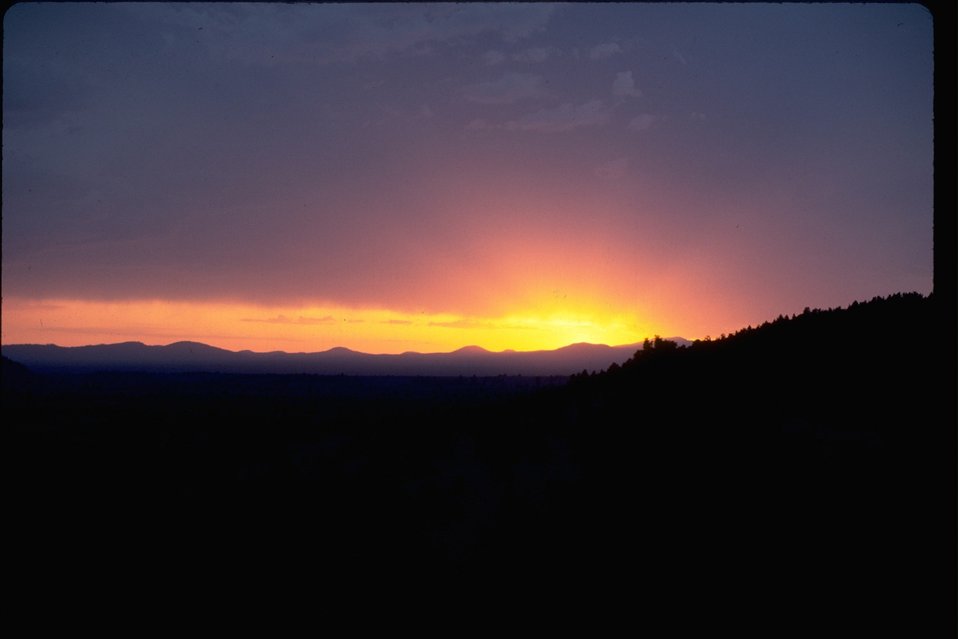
Devils Garden Lava Bed Wilderness Study Area at sunset. OR 1-2.